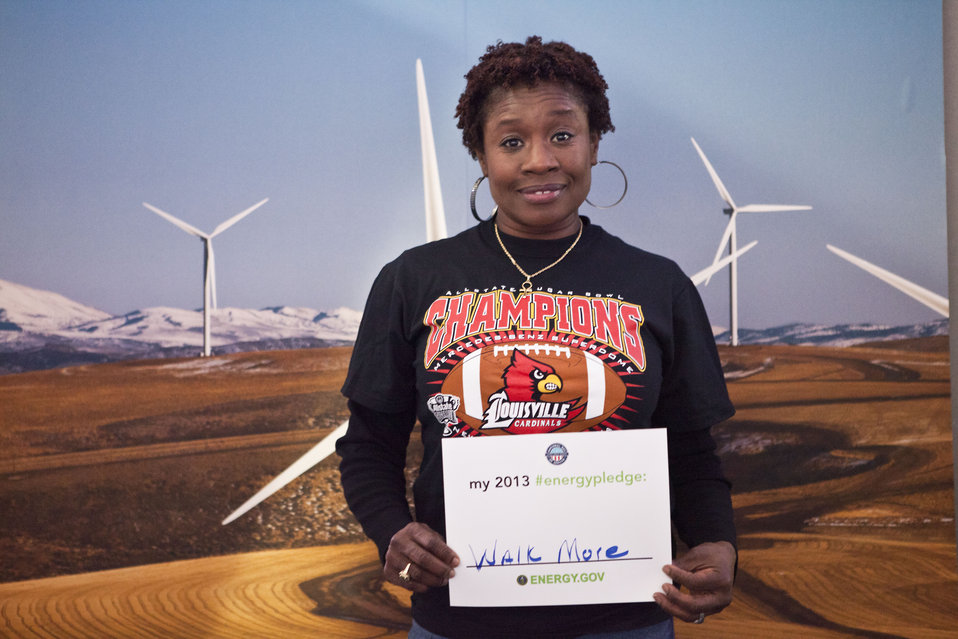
What's your #energypledge?